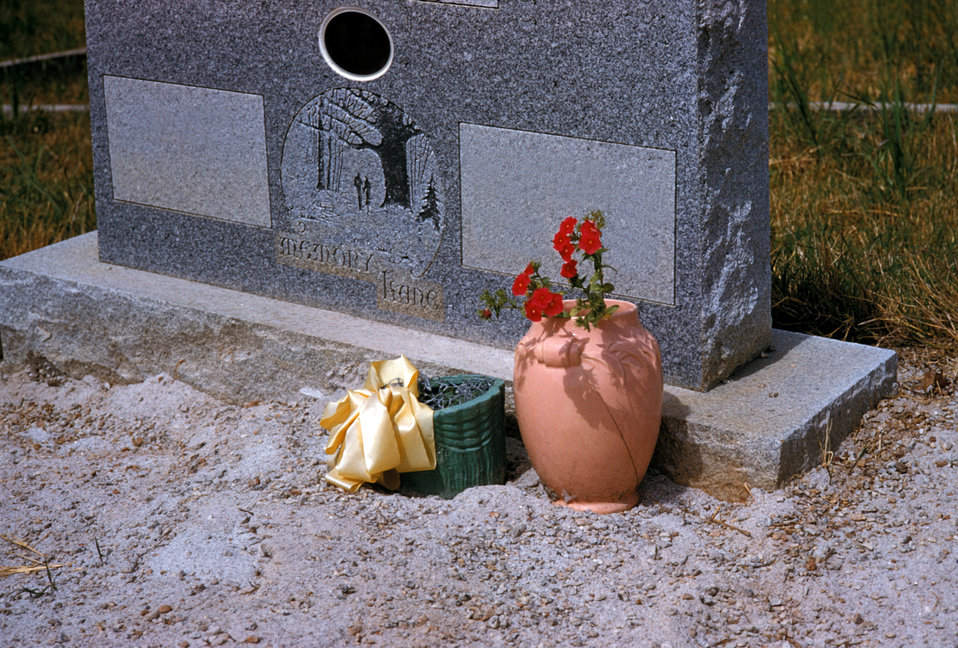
Flower containers act as a breeding place for domestic mosquitoes.